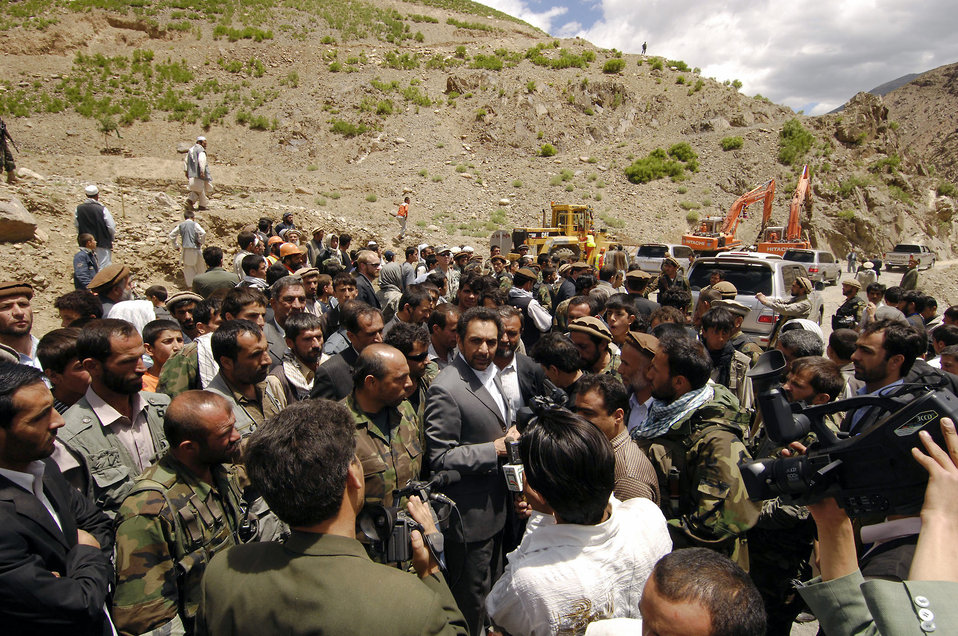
New road brings prosperity to Afghan province

Afghan Vice President Ahmad Zia Massoud speaks to a crowd of more than 1,000 at a groundbreaking ceremony for the Barak to Khenj road May 28 in Barak of the Bazarak District of the Panjshir province in Afghanistan. Vice President Massoud, members of parliament, local government and the Panjshir Provincial Reconstruction Team spoke of the logistical and economic freedom the road will bring to the central reaches of the province. The 18-kilometer, two-lane road is scheduled to be completed in March 2009.